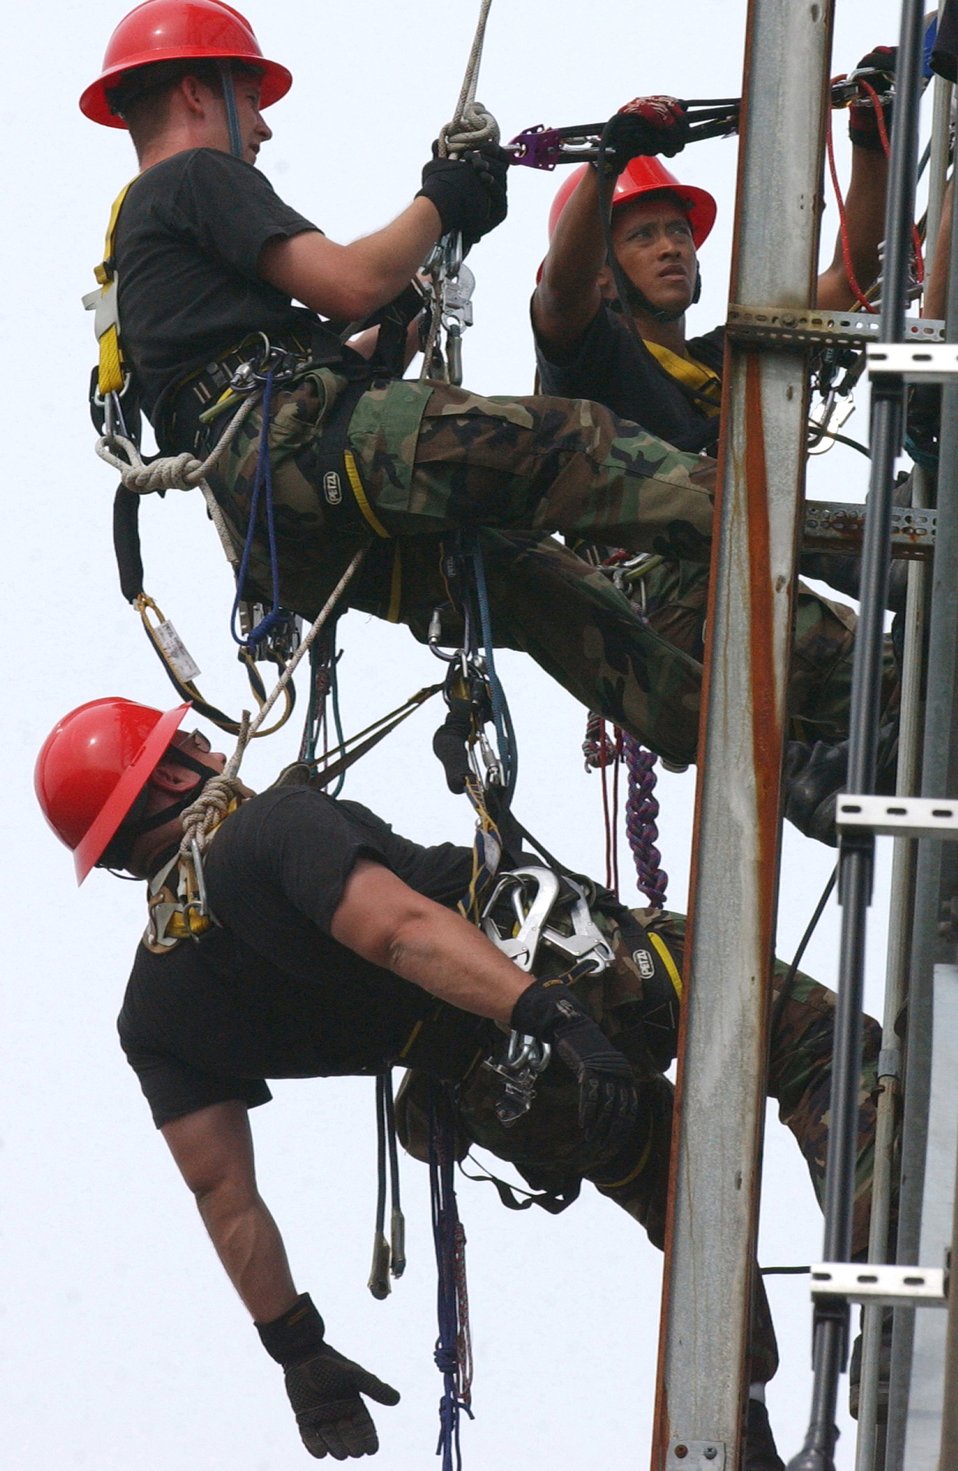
Tower rescue

RAMSTEIN AIR BASE, Germany -- Tech. Sgt Jason Miller, left, and Staff Sgt. Josiah Sojat lower Staff Sgt. Steven Bowenon down during tower rescue training here. The Airmen are assigned to the 1st Communications Maintenance Squadron at Kapaun Air Station, Germany.